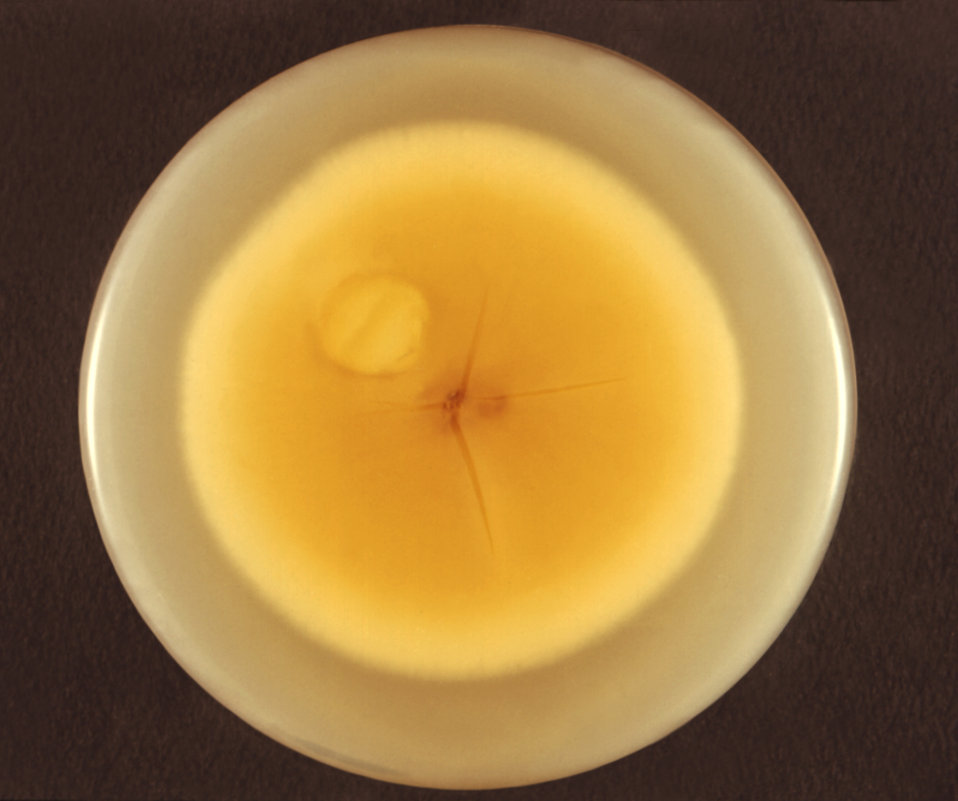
This image depicts the reverse view, i.e., view from the bottom, of a Petri dish culture in which was growing the teleomorph, or end-stage phase, of the fungal organism, Trichophyton mentagrophytes. A dermatophytic fungus, this teleomorphic phase is also known as, Arthroderma benhamiae. See PHIL 12659, for a view of this colony from the front.